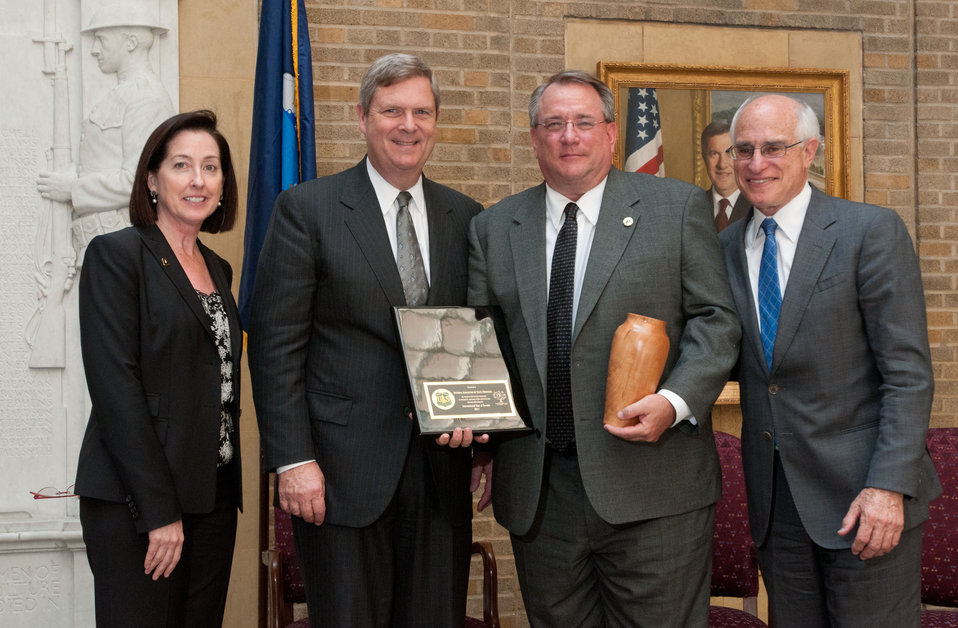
Forest Service Associate Chief Mary Wagner (left), Agriculture Secretary Tom Vilsack (second from left), and Undersecretary for Natural Resources and Environment Harris Sherman (right) present the award to the National Association of State Foresters Past President Steve Koehn (second from right) for the association’s 'service to the forestry community in raising awareness of the value of forests through celebrating the International Year of Forests (IYOF) 2011,' on Friday, June 3, 2011 in the Patio of the Whitten Building, U.S.Department of Agriculture in Washington, DC.